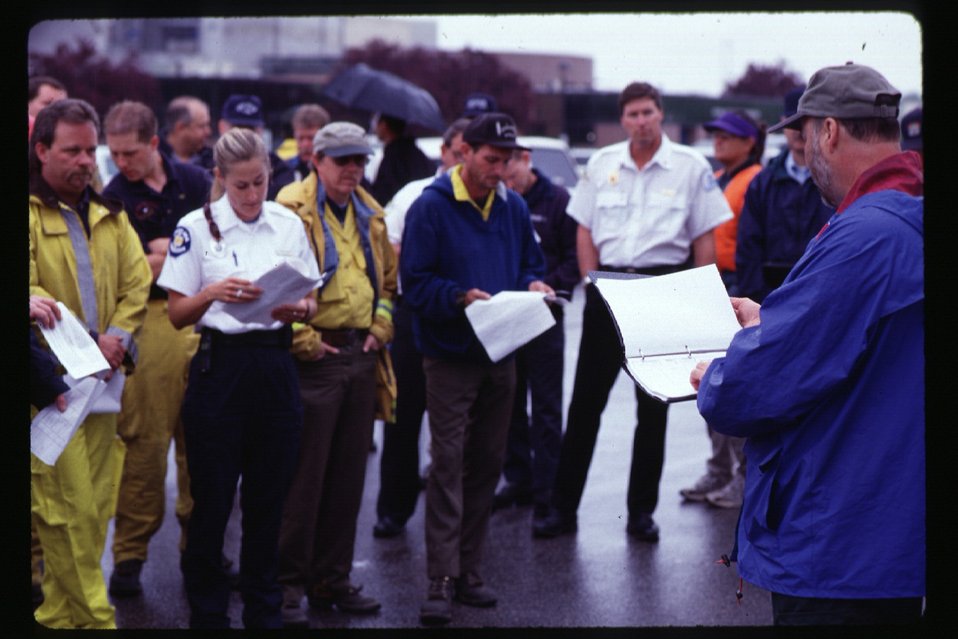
Fire training Four Rivers Field Office LSRD Lower Snake River District